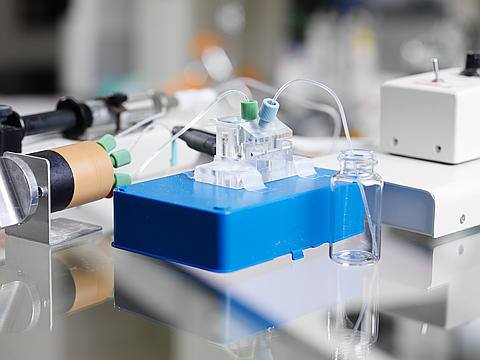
At Pacific Northwest National Laboratory, researchers are conducting cutting edge work to build highly efficient, noninvasive sensors based on carbon nanotube technologies.